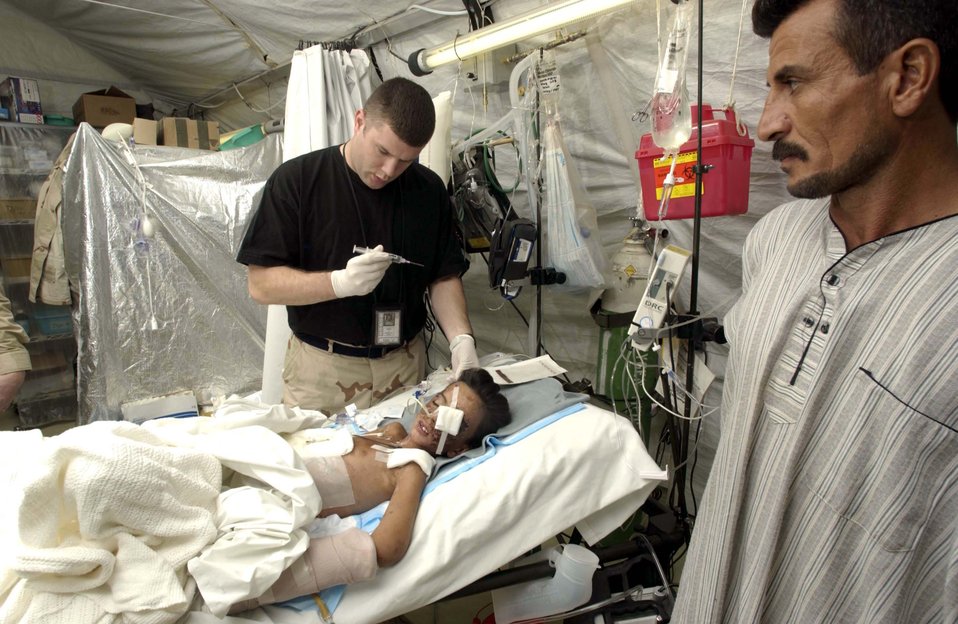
Mending the wounded

TALLIL AIR BASE, Iraq -- Capt. James Smith prepares medication for 9-year-old Saleh Kahlaf while his father, Raheem Kahlaf, watches. Saleh was critically injured by a land mine near his school in Al Nasiriyah and had been cared for by 332nd Expeditionary Medical Squadron airmen until his aeromedical evacuation mission to the United States. The boy arrived at Children's Hospital and Research Center in Oakland, Calif., on Nov. 10. Smith is assigned to the 332nd EMEDS hospital here.